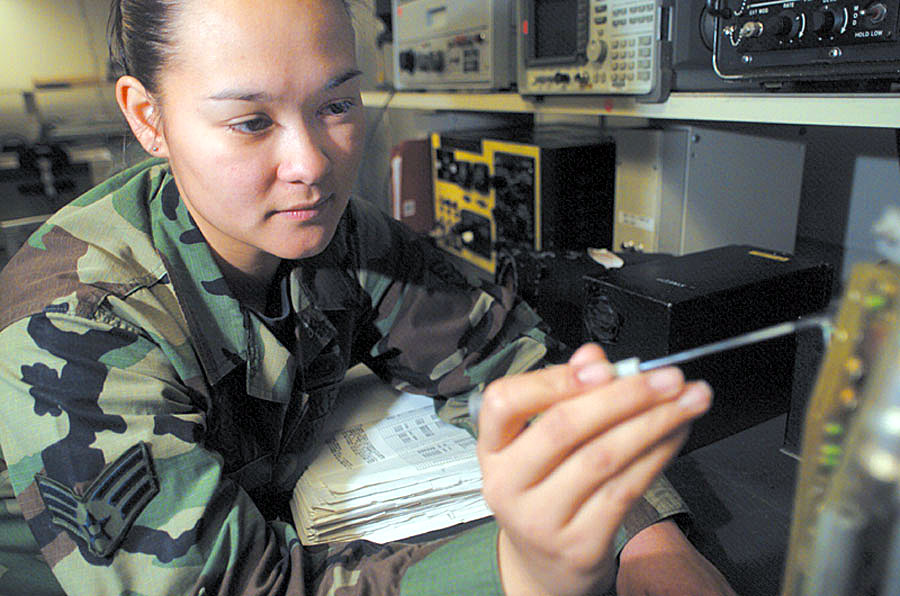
Great idea!

DAVIS-MONTHAN AIR FORCE BASE, Ariz. -- Senior Airman Charissa Gayou adjusts the voltage on the power supply of a receiver-transmitter. She received $10,000 through the Innovative Development through Employee Awareness program for her suggestion to change a technical order concerning the packaging of radar antennas. The idea saved the Department of Defense more than $475,000 in 2003. She is assigned to the 355th Component Maintenance Squadron here.